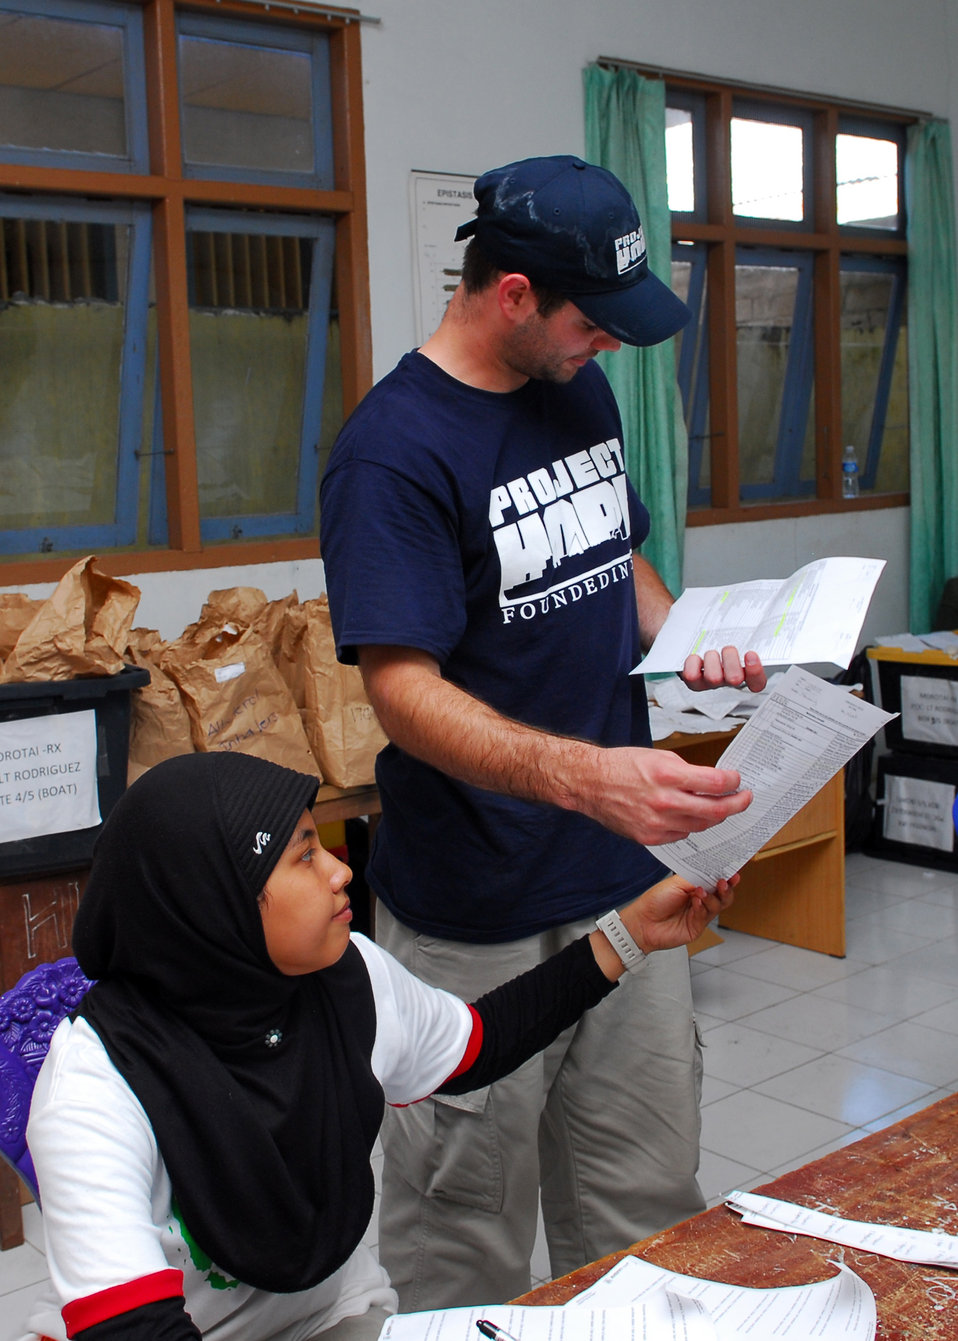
A Project HOPE volunteer medical professional and host nation pharmacist review a list of prescriptions for distribution during a medical civic action program in Daruba, Indonesia on July 15, 2010. The Military Sealift Command hospital ship USNS Mercy (T-AH 19) is in the North Maluku Islands conducting Pacific Partnership 2010, the fifth in a series of annual U.S. Pacific Fleet endeavors conducted in Indonesia as a disaster relief exercise aimed at strengthening regional partnerships.